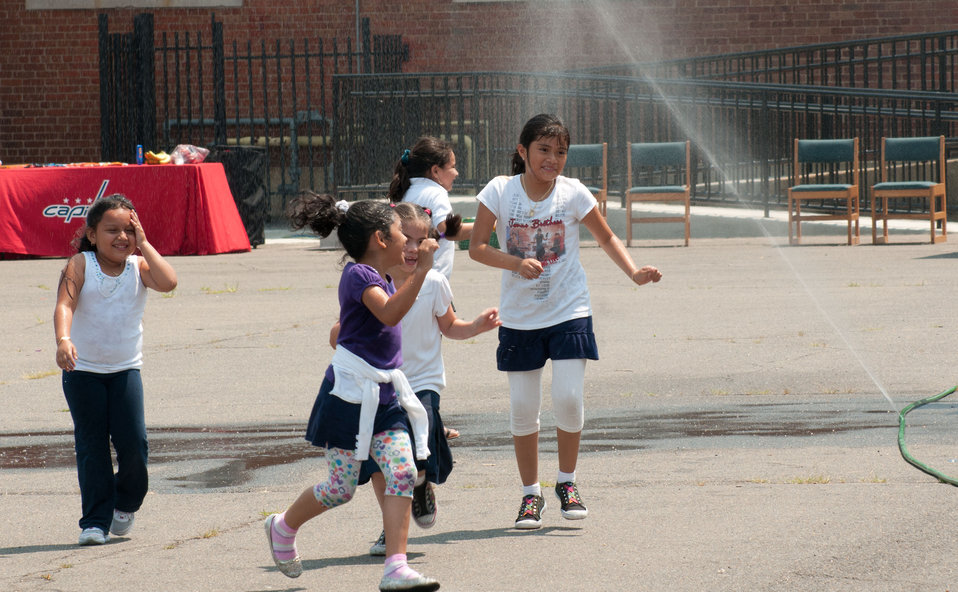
A leak in a garden hose drew the William B. Powell Elementary School students to it during recess and visits to the People’s Garden being constructed at their school in Washington, DC, on Thursday, June 9, 2011. Volunteers from U.S. Department of Agriculture People’s Garden Executive Master Gardener program and Washington Capitals hockey organization, along with defenseman Jeff Schultz, and mascot Slapshot transformed a grassy corner of the school playground into a habitat garden and outdoor learning area. Executive Master Gardeners led the volunteer project teams. The Washington Capitals donated new tools; tool shed; garden materials; lunch; most of the volunteers and more. The completed projects included a walking path; tiling of garden plots; planting a bird habitat garden, pollinator garden and native grasses; caterpillar and butterfly plaques; hummingbird and bat house, and tool shed. The garden will later include a picnic area, outdoor classroom, hummingbird garden, Monarch watch garden, native bee garden, and birdbath. USDA challenges its employees to establish People's Gardens at USDA facilities worldwide or on this case, help communities create gardens. People's Gardens vary in size and type, but all have a common purpose - to help the community and the environment.